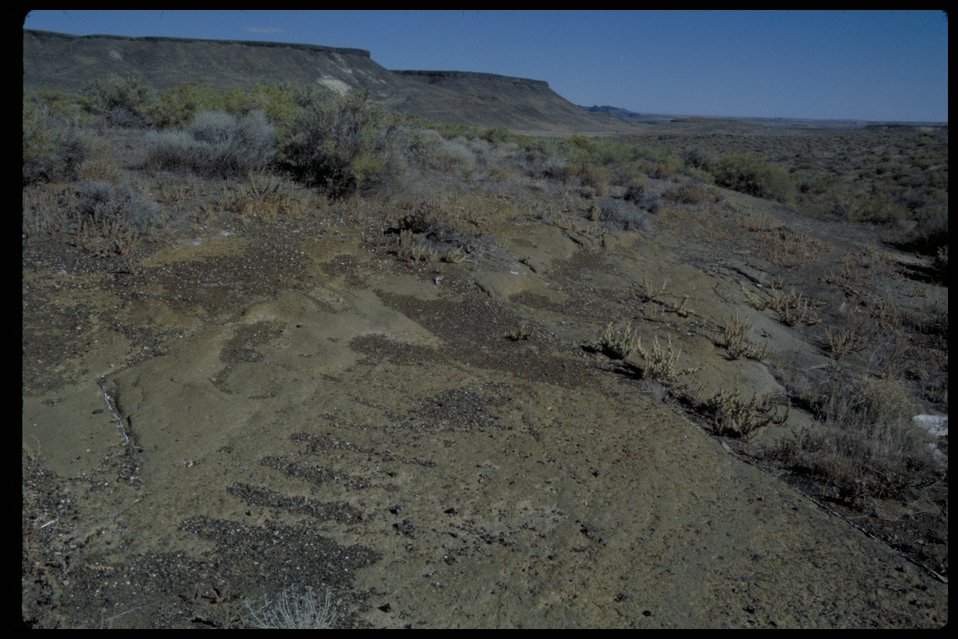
Oregon Trail near Wildhorse Butte Lower Snake River District